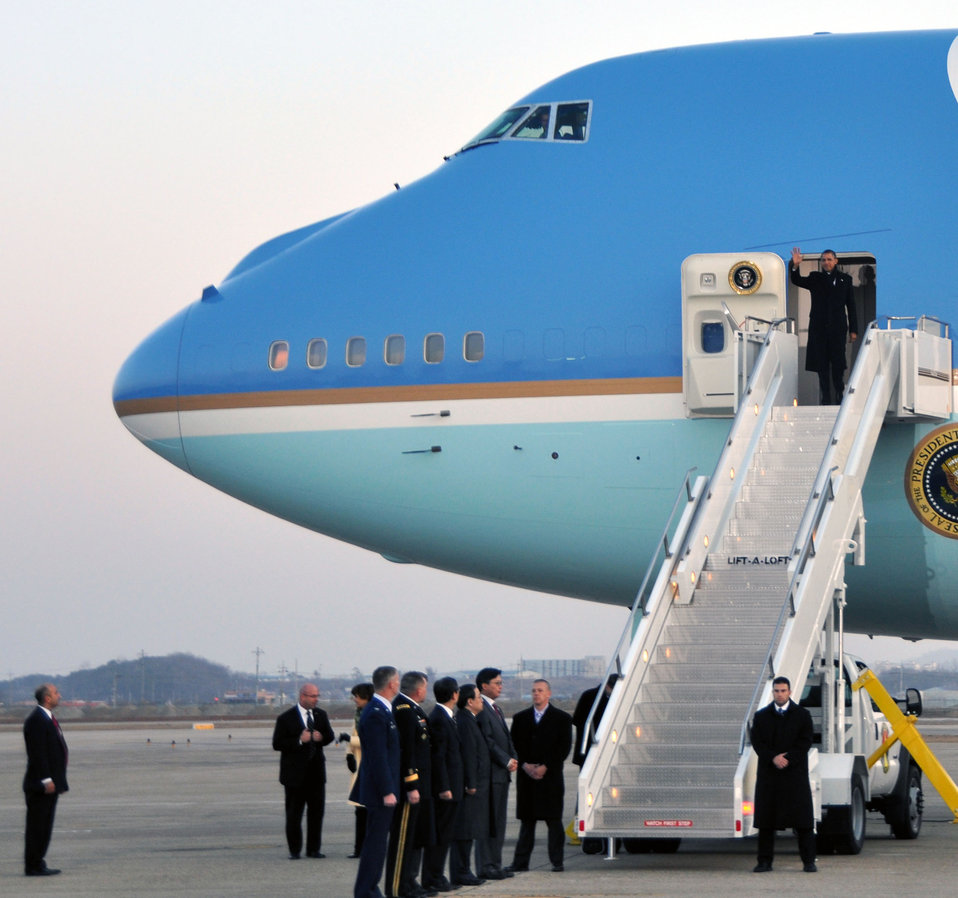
Obama visits Osan AB

President Barack Obama waves as he exits Air Force One during his arrival at Osan Air Base, South Korea, March 25, 2012. The president transited the base on his way to the 2012 Nuclear Security Summit in Seoul, South Korea.